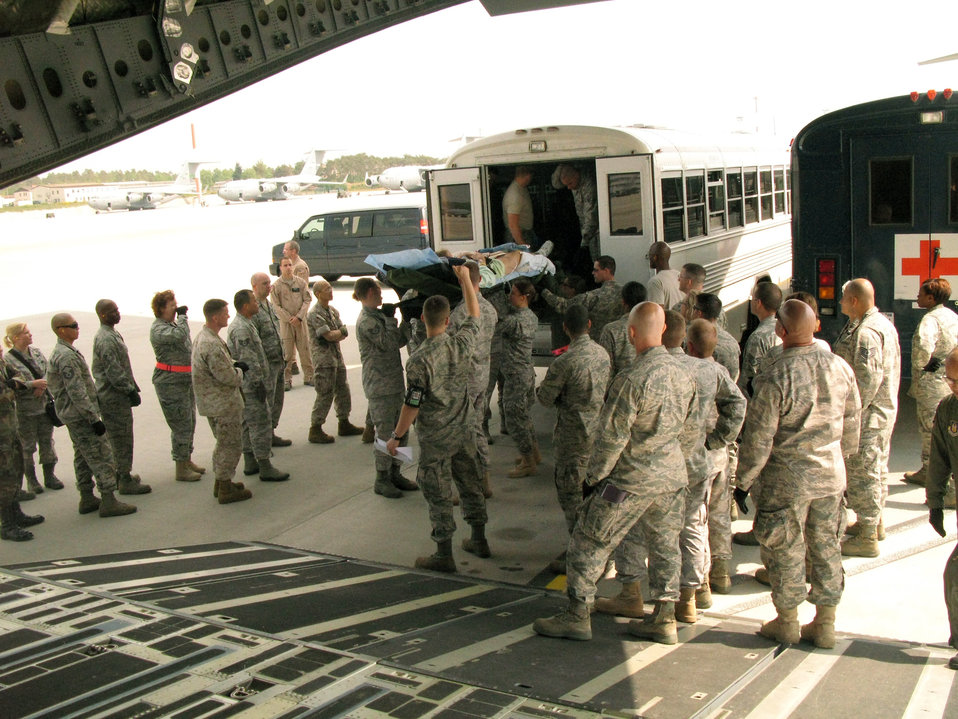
AE Afghanistan

Aeromedical evacuation team members and volunteers at Ramstein Air Base, Germany, prepare to carry patients being transferred from Landstuhl Regional Medical Center for a flight to Joint Base Andrews, Md., to receive advanced care in the United States.